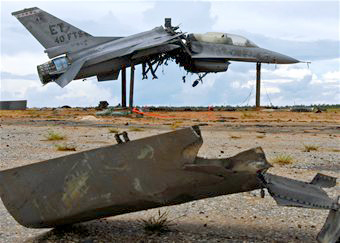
Destructive F-16 test

An explosion ripped the F-16 Fighting Falcon into two pieces and scattered debris across the range Aug. 19, 2010, at Eglin Air Force Base, Fla. The explosion was a test of the flight termination system to be used in the QF-16, a supersonic reusable full-scale aerial target drone modified from an F-16.